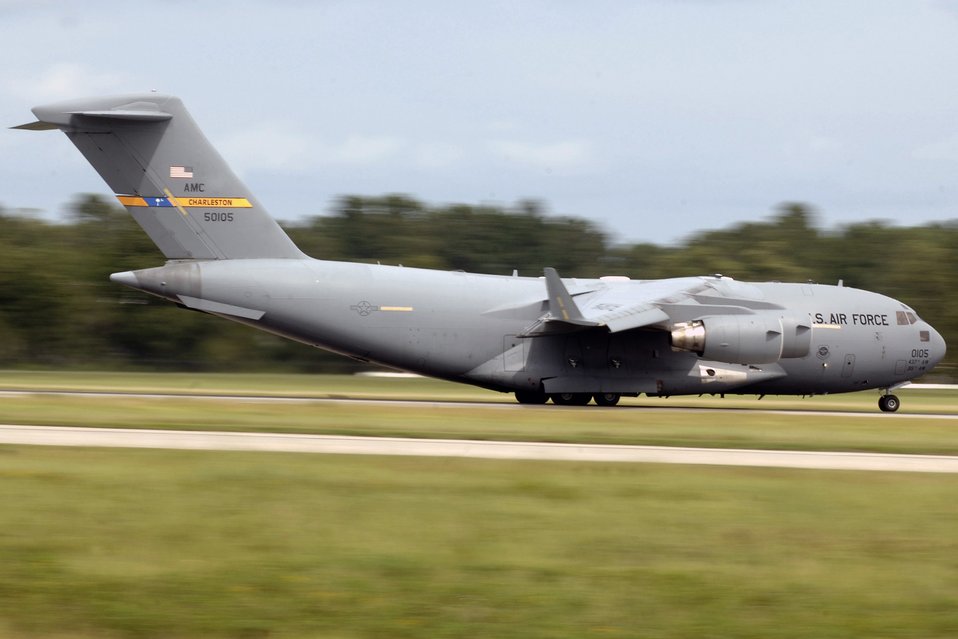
Global mobility aircraft saving lives in Iraq

A C-17 Globemaster III takes off from a stateside location Aug. 30. The Air Force has placed two C-17 squadrons on a 120-day rotation in the U.S. Central Command Air Forces area of responsibility, according to Gen. Duncan J. McNabb, Air Mobility Command commander, who spoke at the Air Force Association's 2006 Air and Space Conference and Technology Exposition in Washington, D.C., Sept. 26. Those C-17s are now experiencing more wear and tear than would be expected under normal operations.